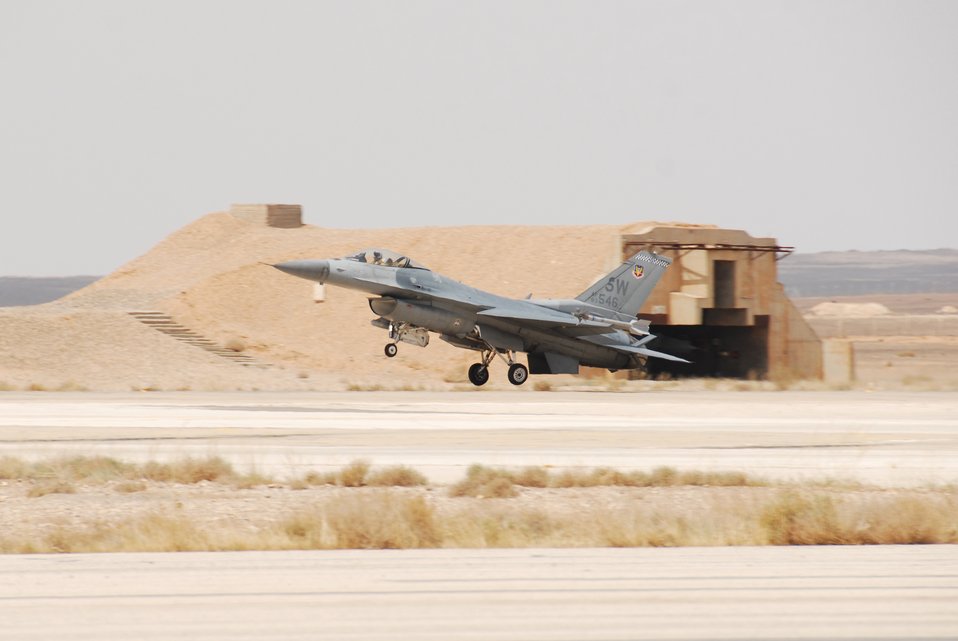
Airpower Summary

An F-16 Fighting Falcon lands May 20 after performing a training mission of basic fighter maneuvers during the 2007 Falcon Air Meet in Azraq, Jordan. The event was founded by Jordan's Royal Highness Prince Feisal Bin Al Hussein to get F-16 users in the region to exercise and exchange information. Air forces from Jordan, Turkey, Belgium and the United States participated in the 2007 FAM.